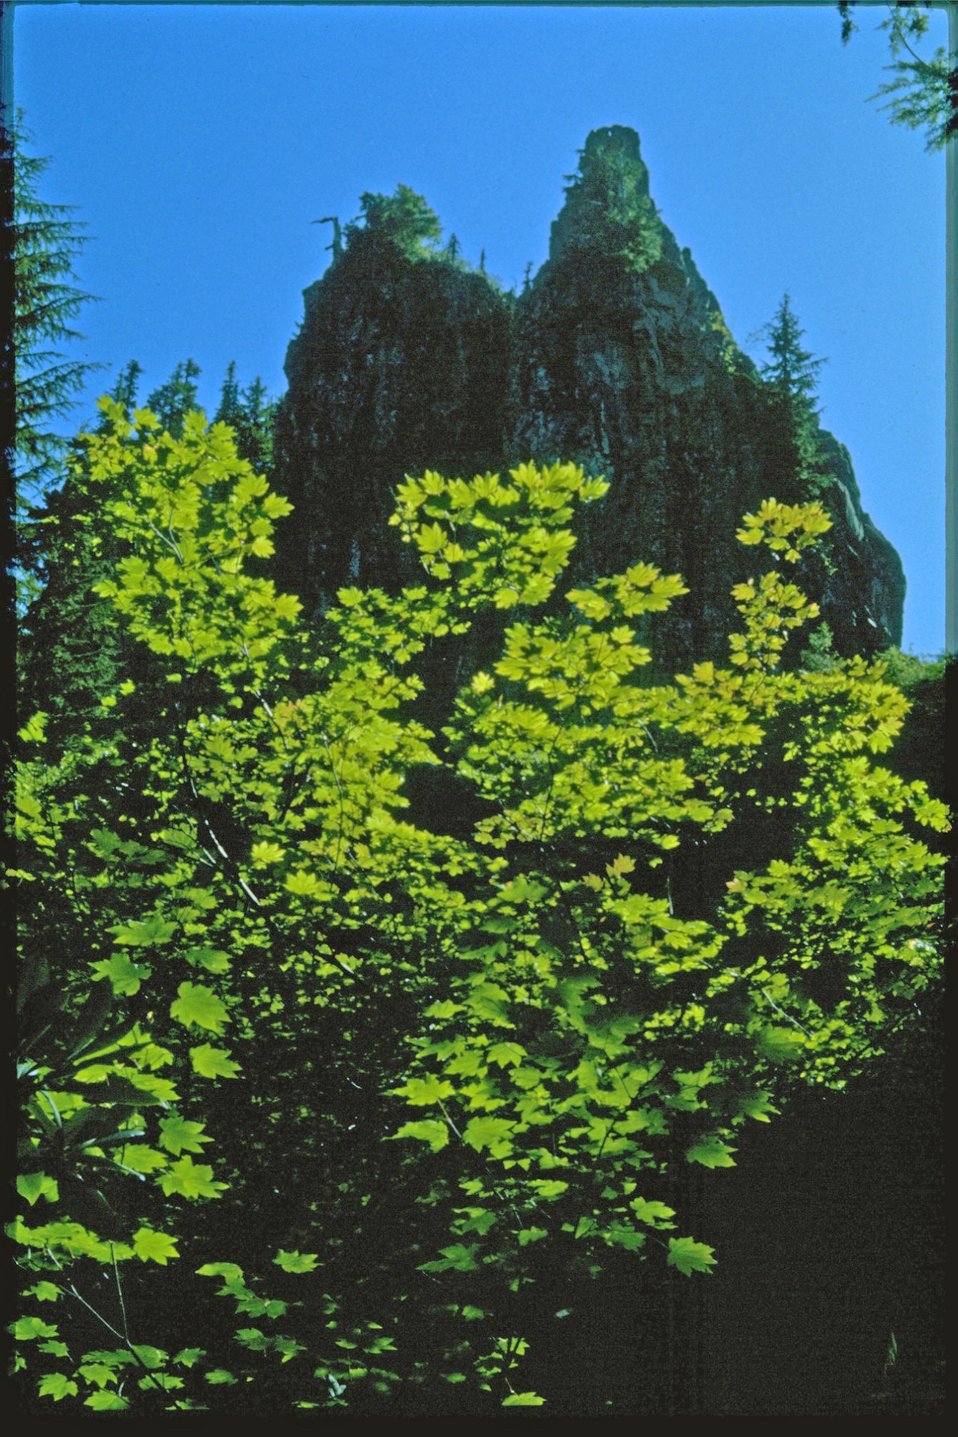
Along the Table Rock Trail .